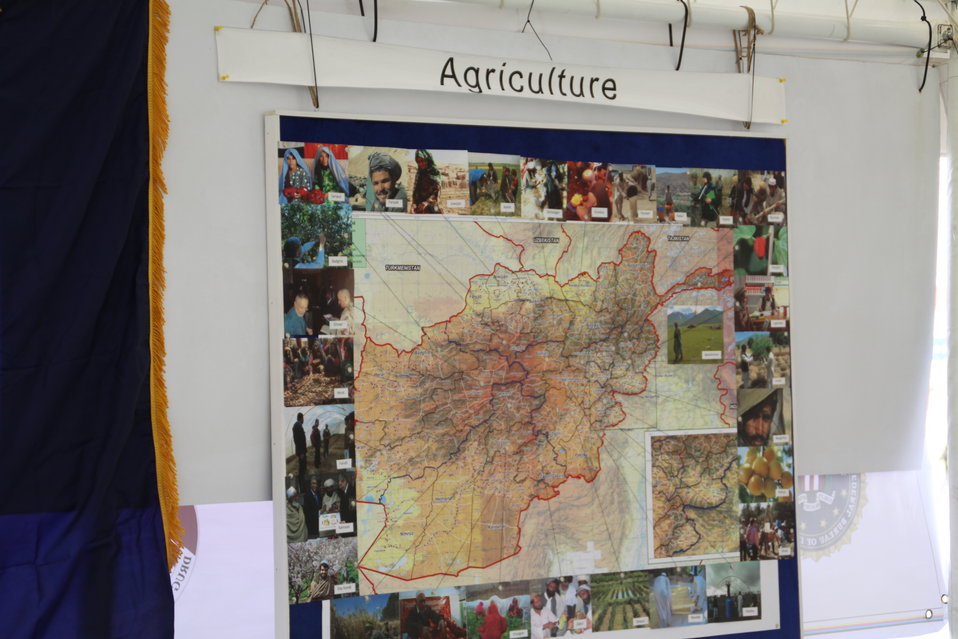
Official July 4th Event Preparation